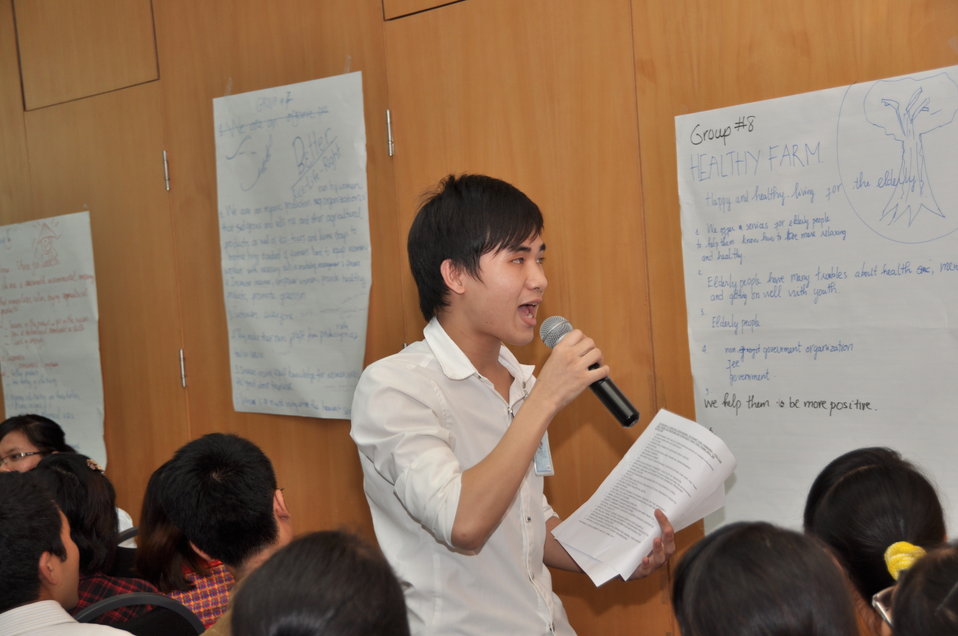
Vietnamese university students join the Business Plan Mashup exercise

Photo: @USAIDVietnam, November 16, 2012